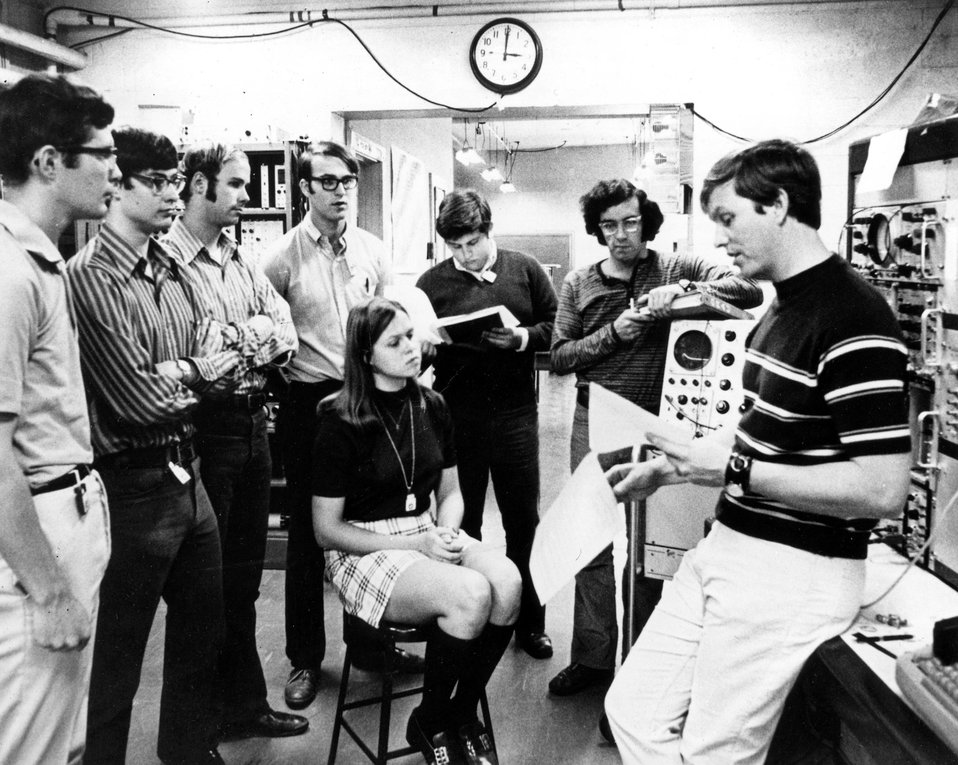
Cooperative educational programs are conducted in several ways at the Atomic Energy Commission's laboratories. c. 1972